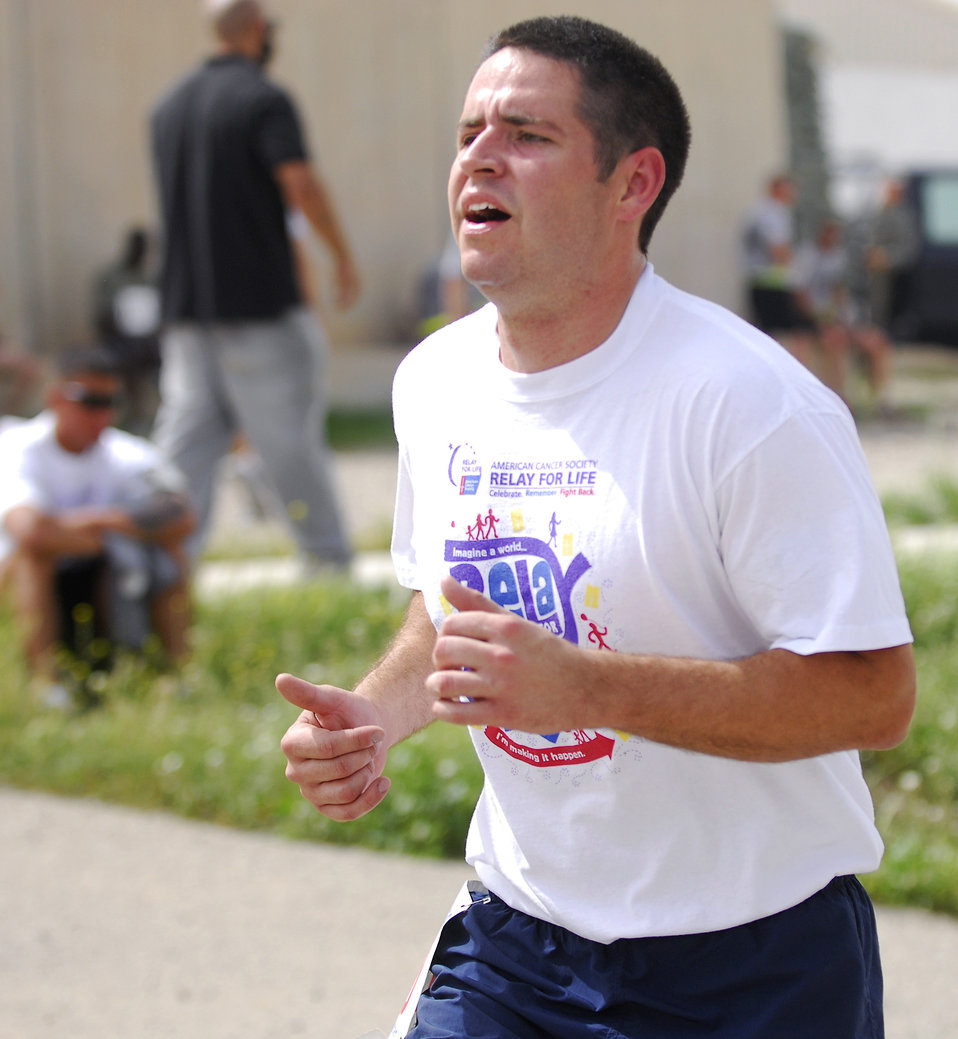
Charity run raises money for American Cancer Society

Staff Sgt. Tyler McInturff finishes the Relay for Life 5K April 2, 2011, at Kirkuk Regional Air Base, Iraq. Sergeant McInturff organized the run, raising nearly $4,000 for the American Cancer Society. He is assigned to the 321st Expeditionary Logistics Readiness Squadron.